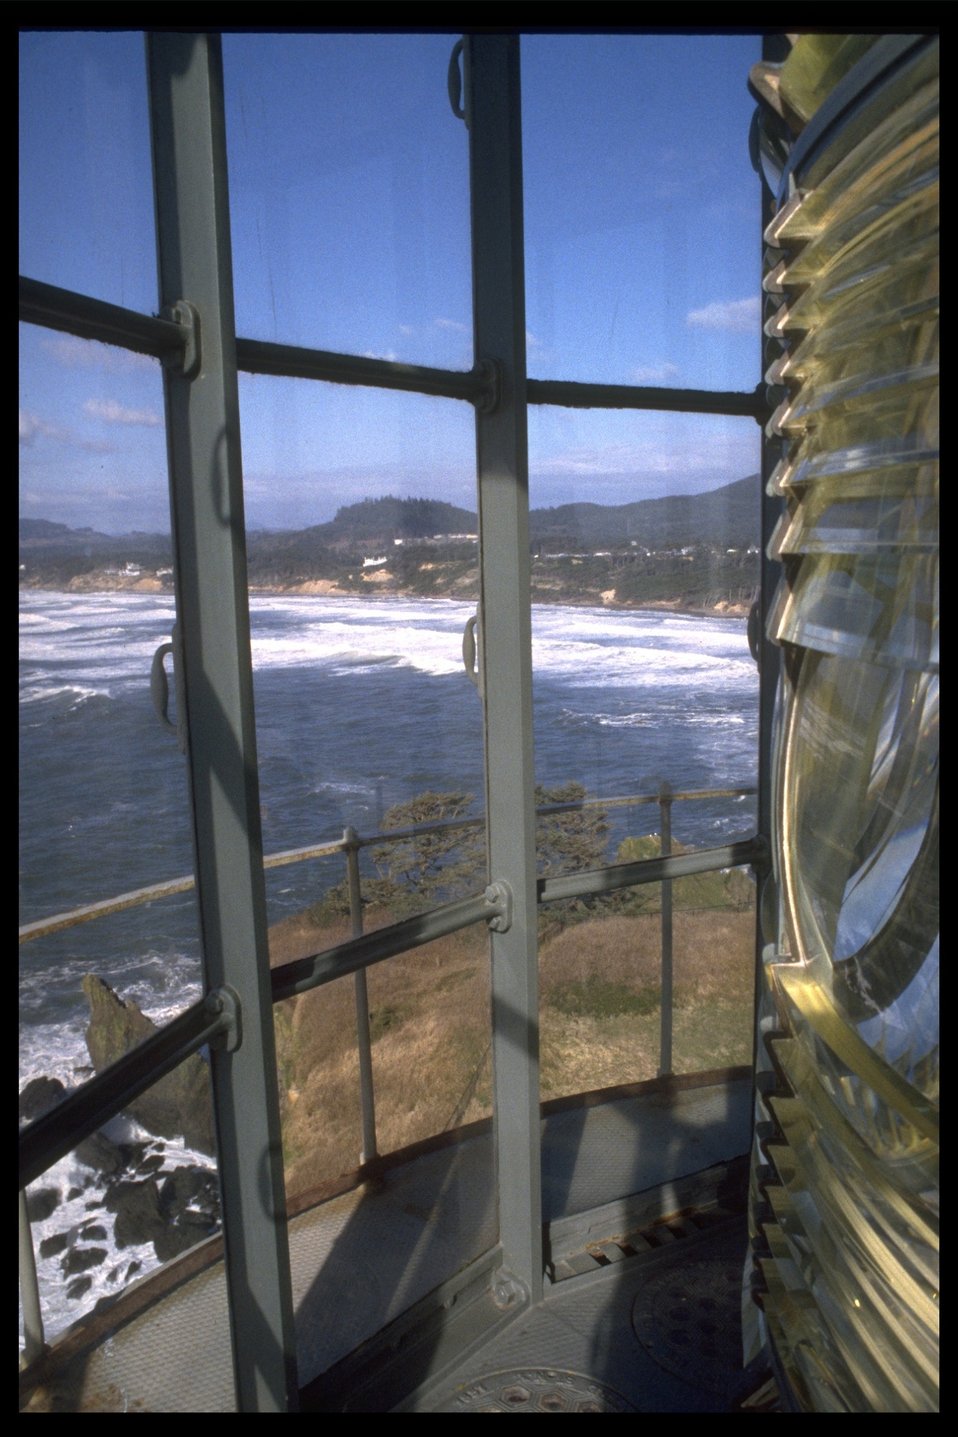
View from Yaquina Head Lighthouse lens area.